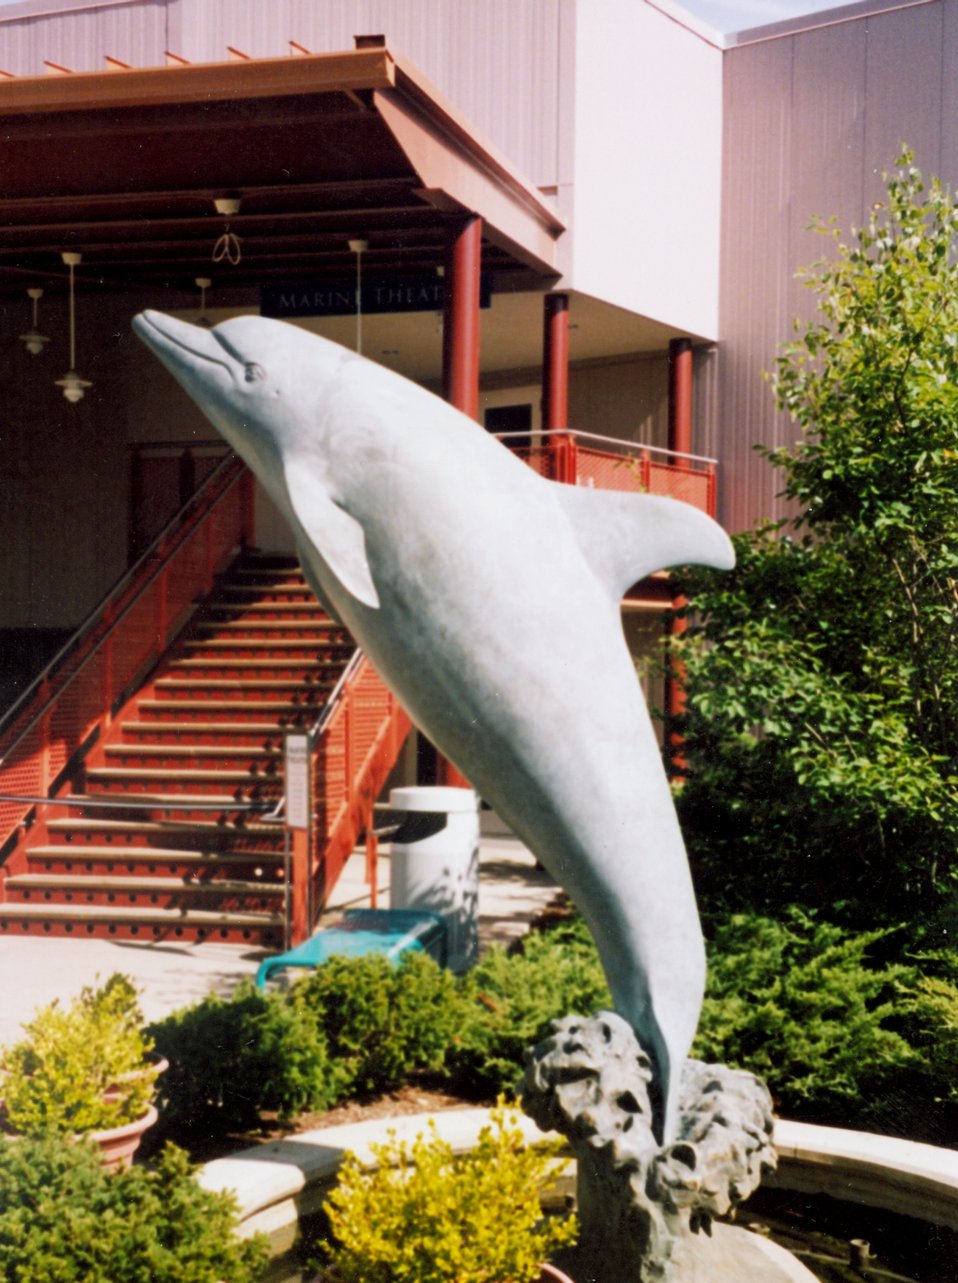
Dolphin statue at Mystic Seaport Aquarium.